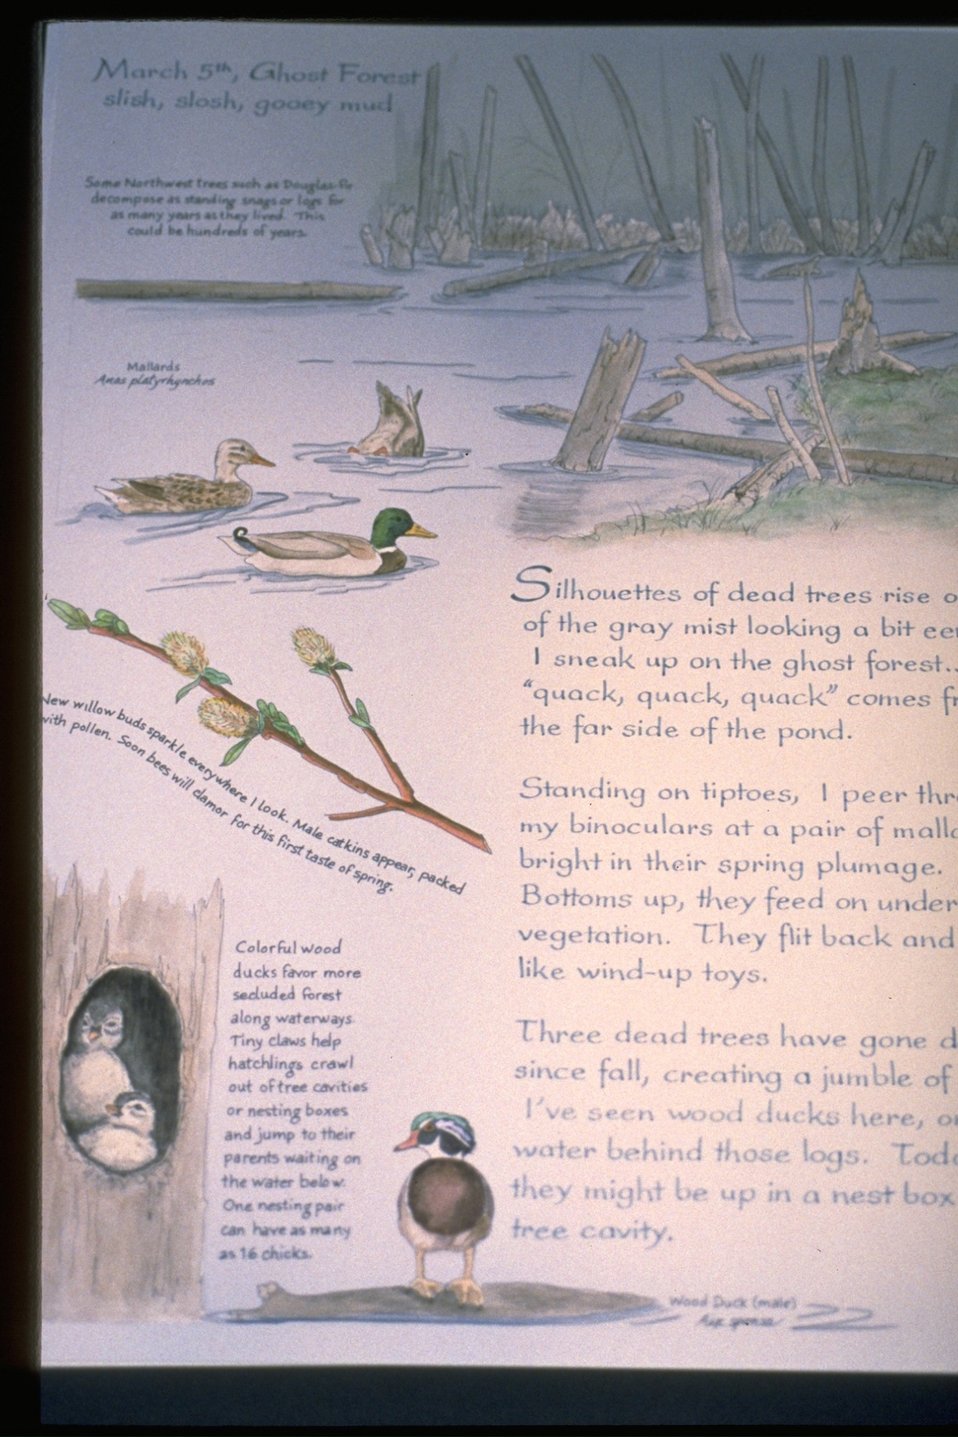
Interpretive Panels: Boardwalk Trail Journals.